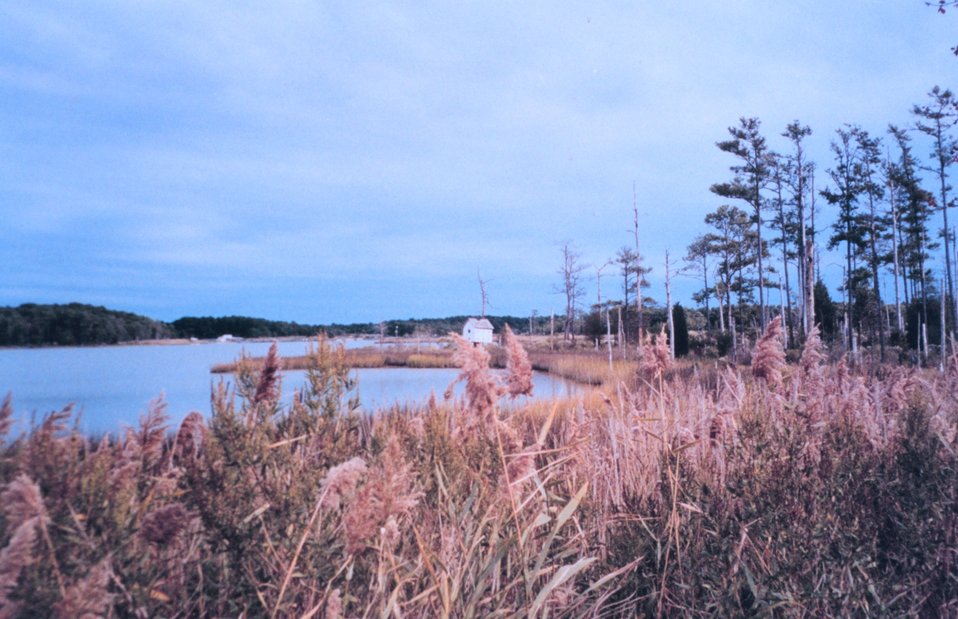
Marsh area behind Point Lookout State Park.